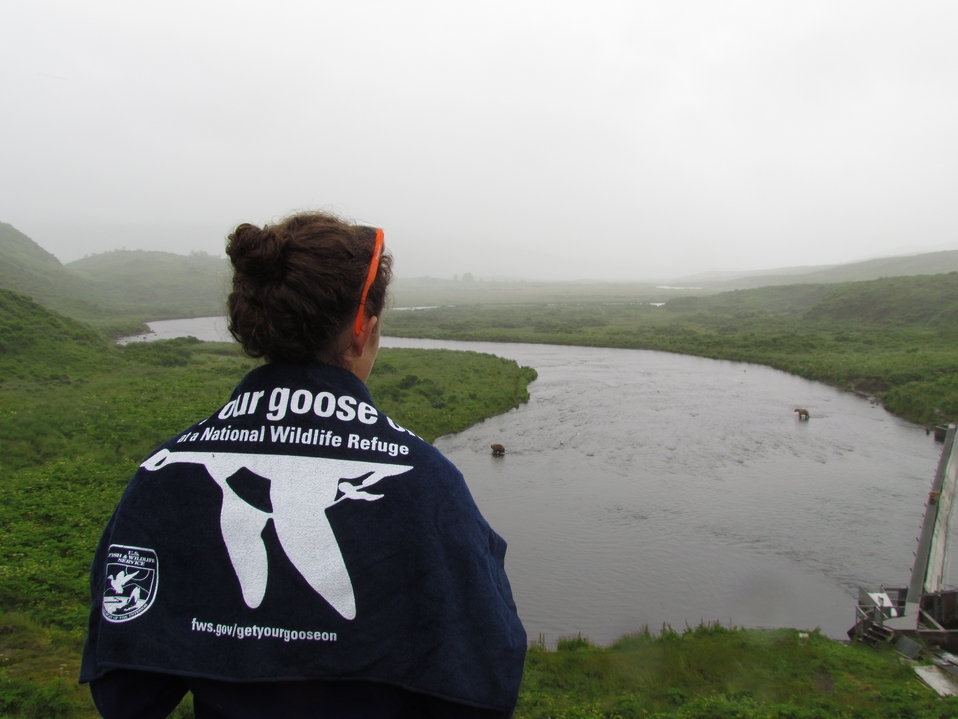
Get Your Goose On! - Alaska Style

YCC worker Iris Blakeslee with Kodiak Brown Bears in background.

Credit: Shelly Lawson / USFWS

The Kodiak National Wildlife Refuge is a United States National Wildlife Refuge in the Kodiak Archipelago in southwestern Alaska, United States.

The Kodiak National Wildlife Refuge includes the southwestern two-thirds of Kodiak Island, Uganik Island, the Red Peaks area of Afognak Island and all of Ban Island in the archipelago. It encompasses 1,990,418 acres (8,054.94 km2).[2] The refuge is administered from offices in Kodiak.

The refuge contains seven major rivers and about 100 streams. It is a spawning ground for all six species of Pacific Ocean salmon, trout and several other fish species, as well as a nesting ground for 250 species of bird, many of which feed on salmon. The refuge has only six native species of mammals: Kodiak brown bear, red fox, river otter, ermine, little brown bat and tundra vole. The non-native mammals Sitka deer, mountain goat, Roosevelt elk, snowshoe hare and beaver were introduced to the archipelago between the 1920s and 1950s and are now hunted and trapped.

The climate of the refuge is that of southern Alaska, mild and rainy. Many areas in the refuge are densely forested with Sitka Spruce at lower elevations. There are grasslands in drier areas and at higher elevations. The refuge contains several small glaciers.